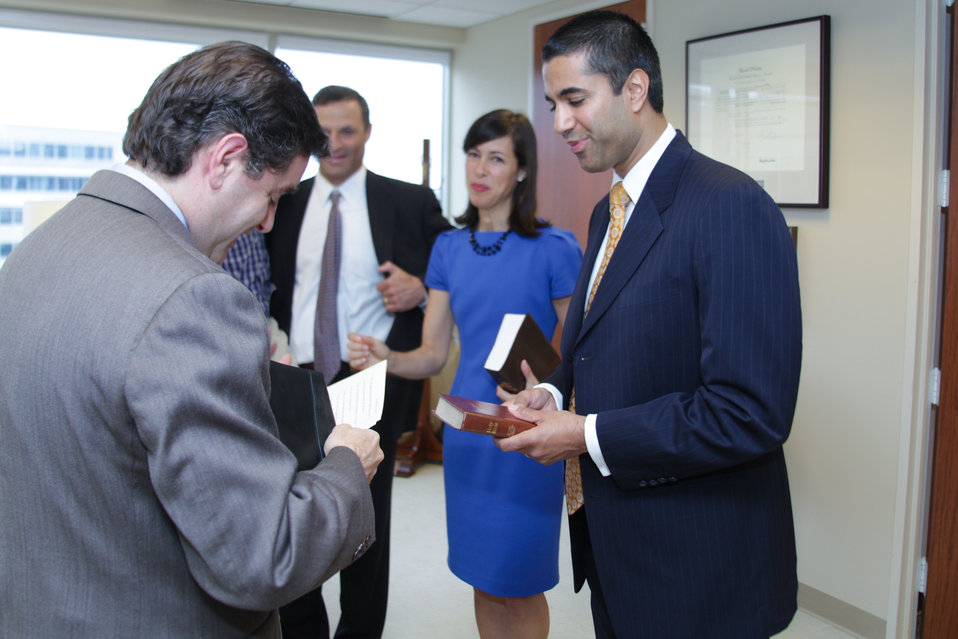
FCC Chairman Genachowski with Commissioners Ajit Pai and Jessica Rosenworcel at the FCC headquarters in Washington, DC.

May 14, 2012.